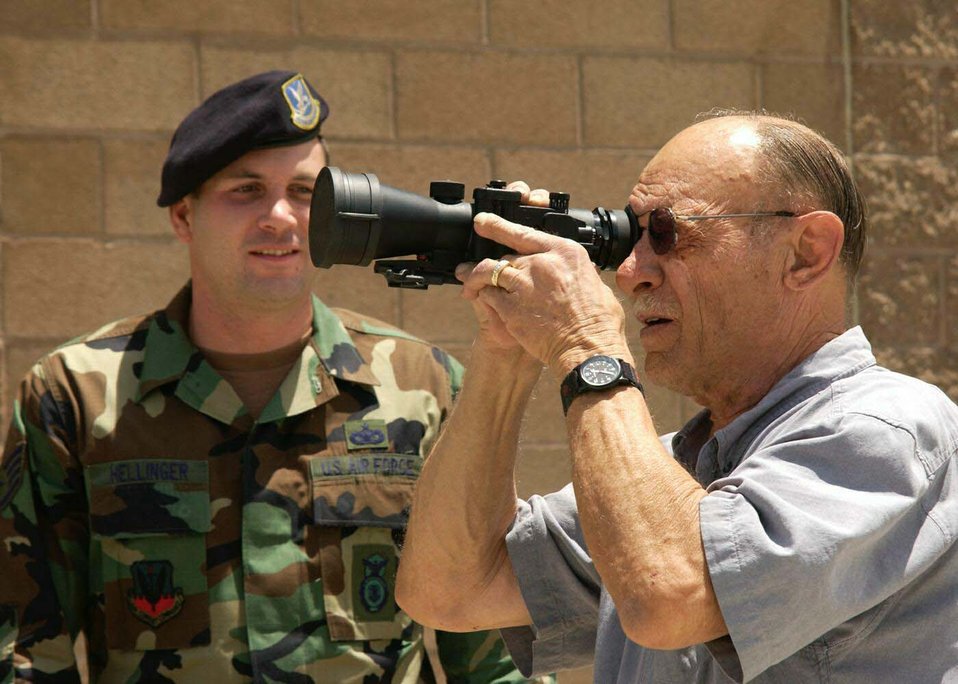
Police week showcase

DAVIS-MONTHAN AIR FORCE BASE, Ariz. -- Staff Sgt. Scott Hellinger shows Eugene Krzyzopolski night-vision equipment here May 17 during National Police Week. Sergeant Hellinger is assigned to the 355th Security Forces Squadron, and Mr. Krzyzopolski is a retired Airman.